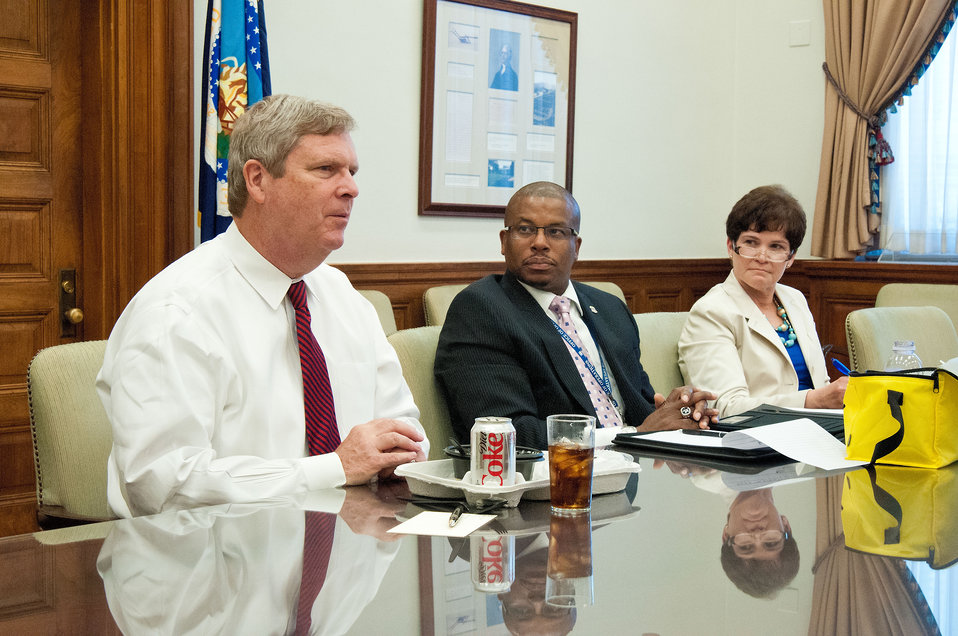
Agriculture Secretary Tom Vilsack (left) and Tony Myers (center), Departmental Management and Krysta Hardin (right), Chief of Staff share a laugh with United States Department of Agriculture employees during a Brown Bag lunch at the United States Department of Agriculture in Washington, D.C., on Wednesday, July 25, 2012. Secretary Vilsack holds Brown Bag Lunches to discuss the role United States Department of Agriculture employees play and to thank them for their dedication and diligence.